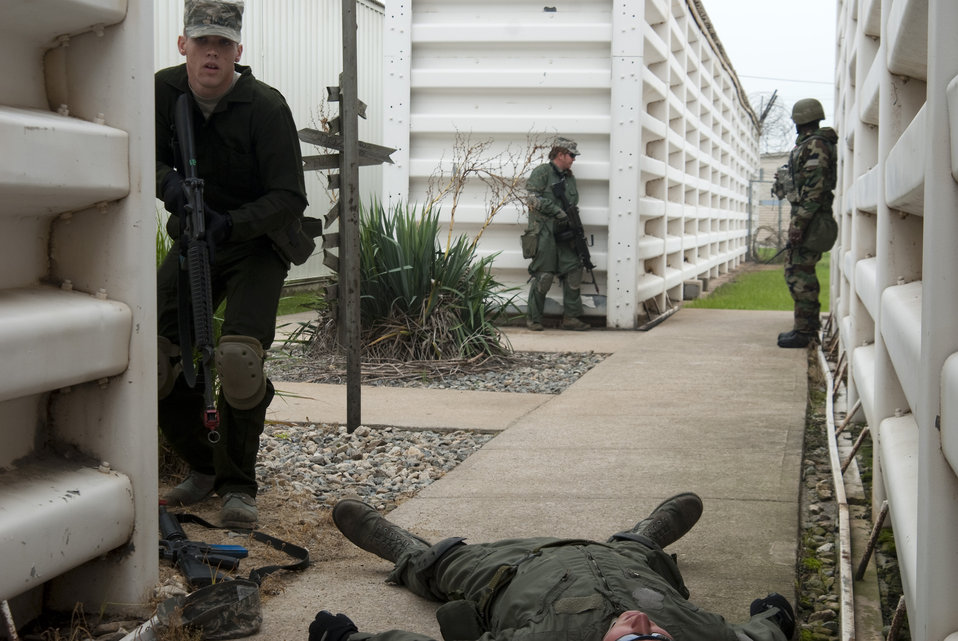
Kunsan Airmen test their skills